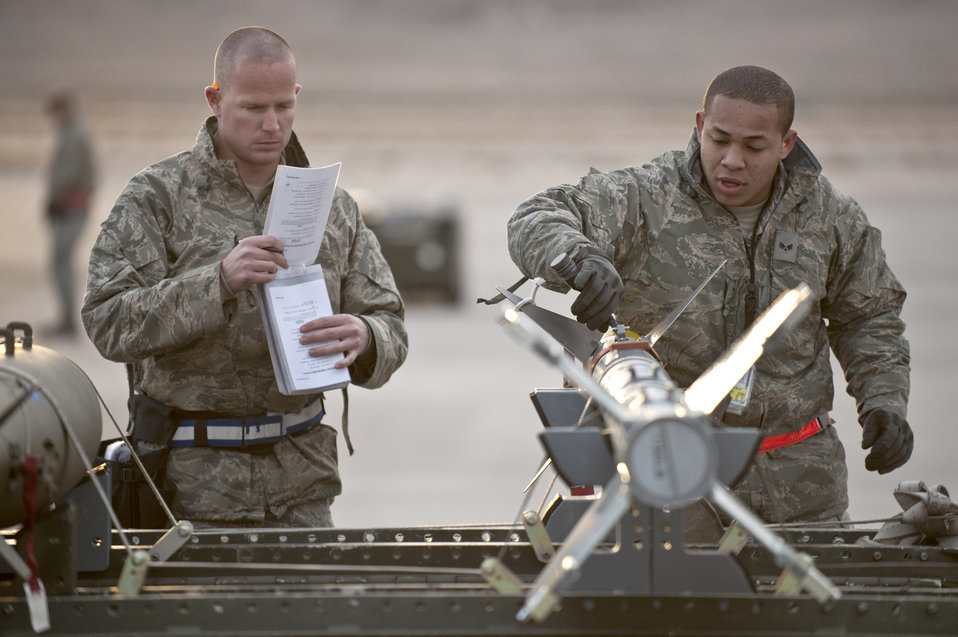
Nellis weapons load competition

Senior Airman Eric Arrington and Senior Airman Keli Manglona go over a pre-load checklist on an AIM-9 air-to-air missile during a weapons load competition Jan. 7, 2011, at Nellis Air Force Base, Nev. Weapons load competitions are conducted quarterly to keep Airmen sharp and recognize superior performers. Weapons load teams are evaluated for their use of the checklist, safety and overall speed. Both Airmen are assigned to the 57th Aircraft Maintenance Squadron as aircraft armament systems journeymen.